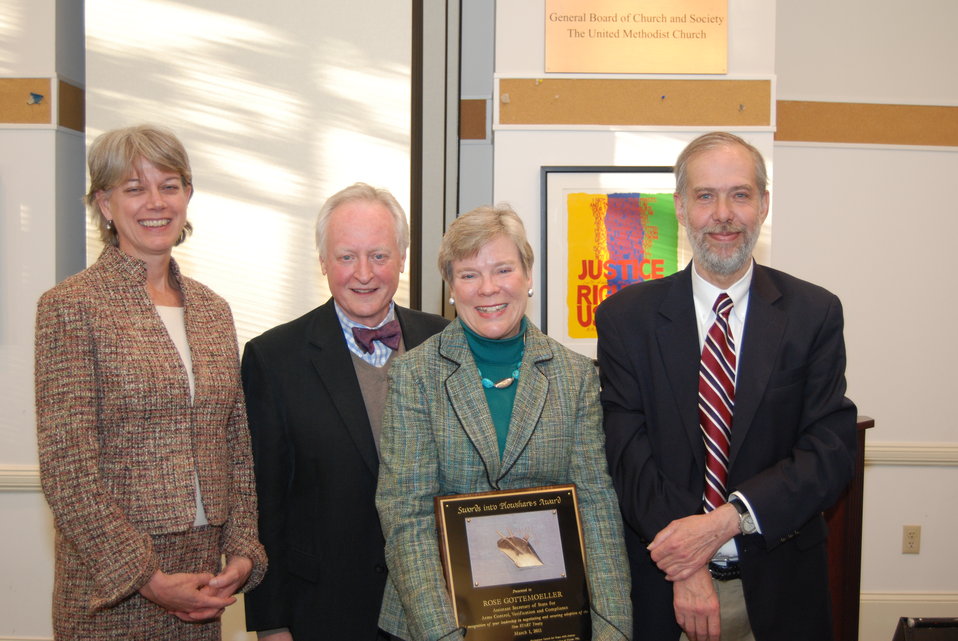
Assistant Secretary Gottemoeller Is Awarded for Excellence By Friends Committee for National Legislation

Assistant Secretary of State for the Bureau of Arms Control, Verification and Compliance Rose Gottemoeller, second from left, is awarded for excellence in leadership negotiating and securing ratification of the New START Treaty by the Friends Committee for National Legislation on February 15, 2011, in Washington, D.C. Other individuals in the photo include: Diane Randall, left, Joe Volk, second from left, and David Culp, right.